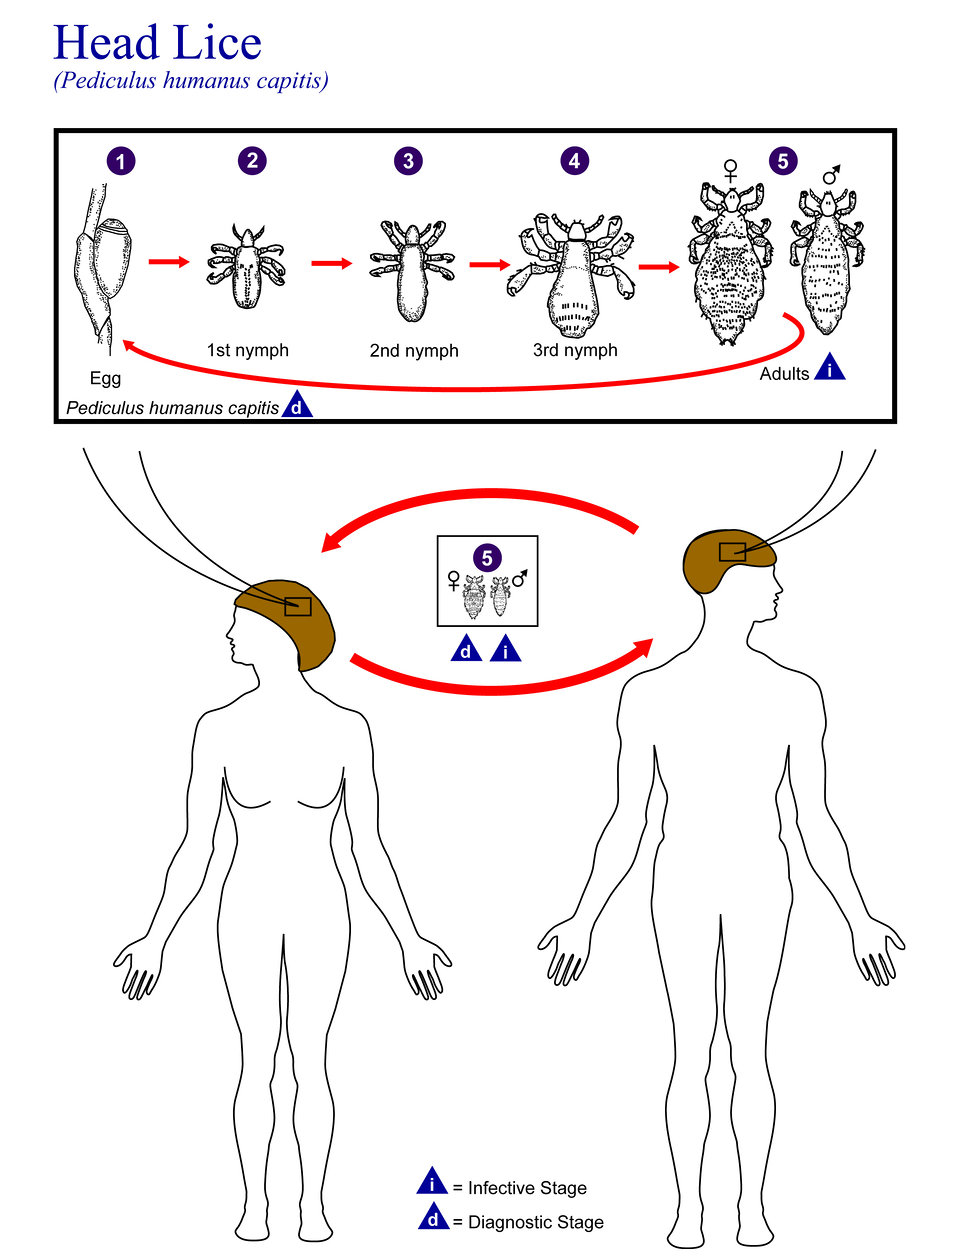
This is an illustration of the life cycle of Pediculus humanus capitis, the causal agent of Head Lice.